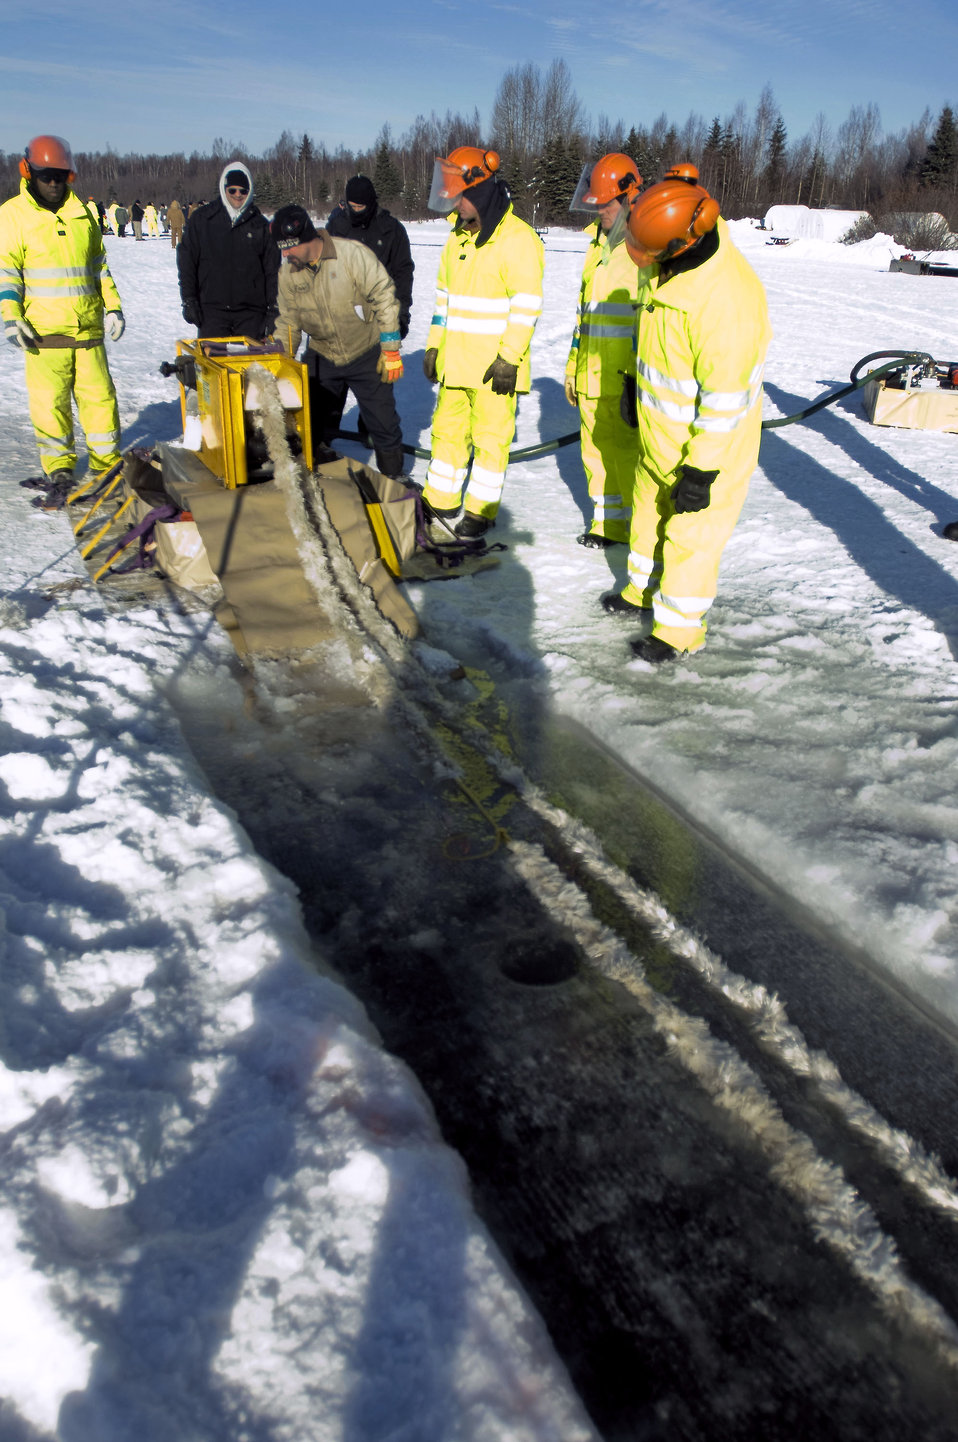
611 Civil Engineer Squadron preps for oil spill

Airmen from the 611th Civil Engineer Squadron run the mop rope to practice collecting oil Feb. 24 on Elmendorf Air Force Base, Alaska. The mop rope is one of the techniques used for collecting oil.